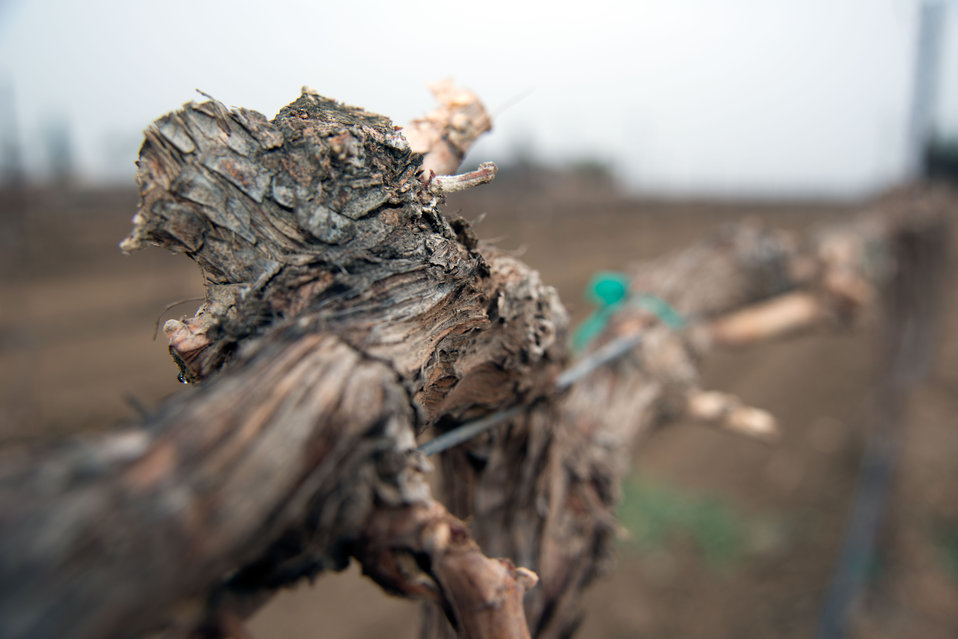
A close-up of damaged grape vines in Michael Vandborg’s drought stricken vineyard in the Lamont farming community in southeastern Joaquin Valley in Kern County, CA on Feb. 26, 2014.